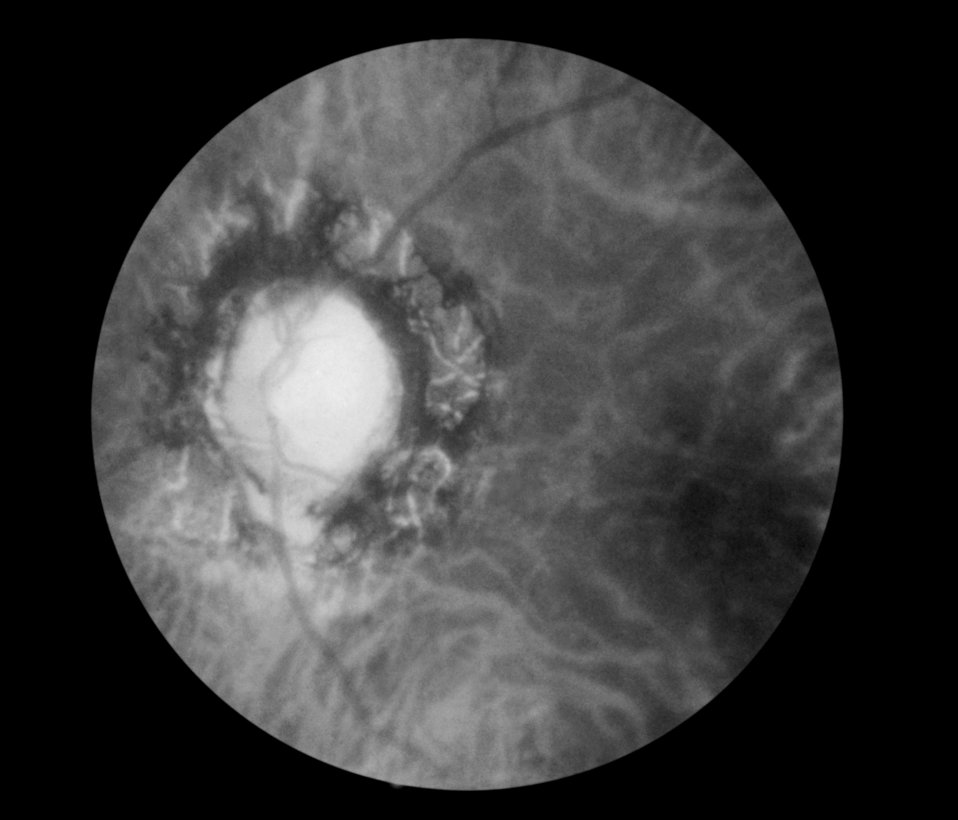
This funduscopic image reveals the effects of late neuro-ocular syphilis on the optic disk and retina.